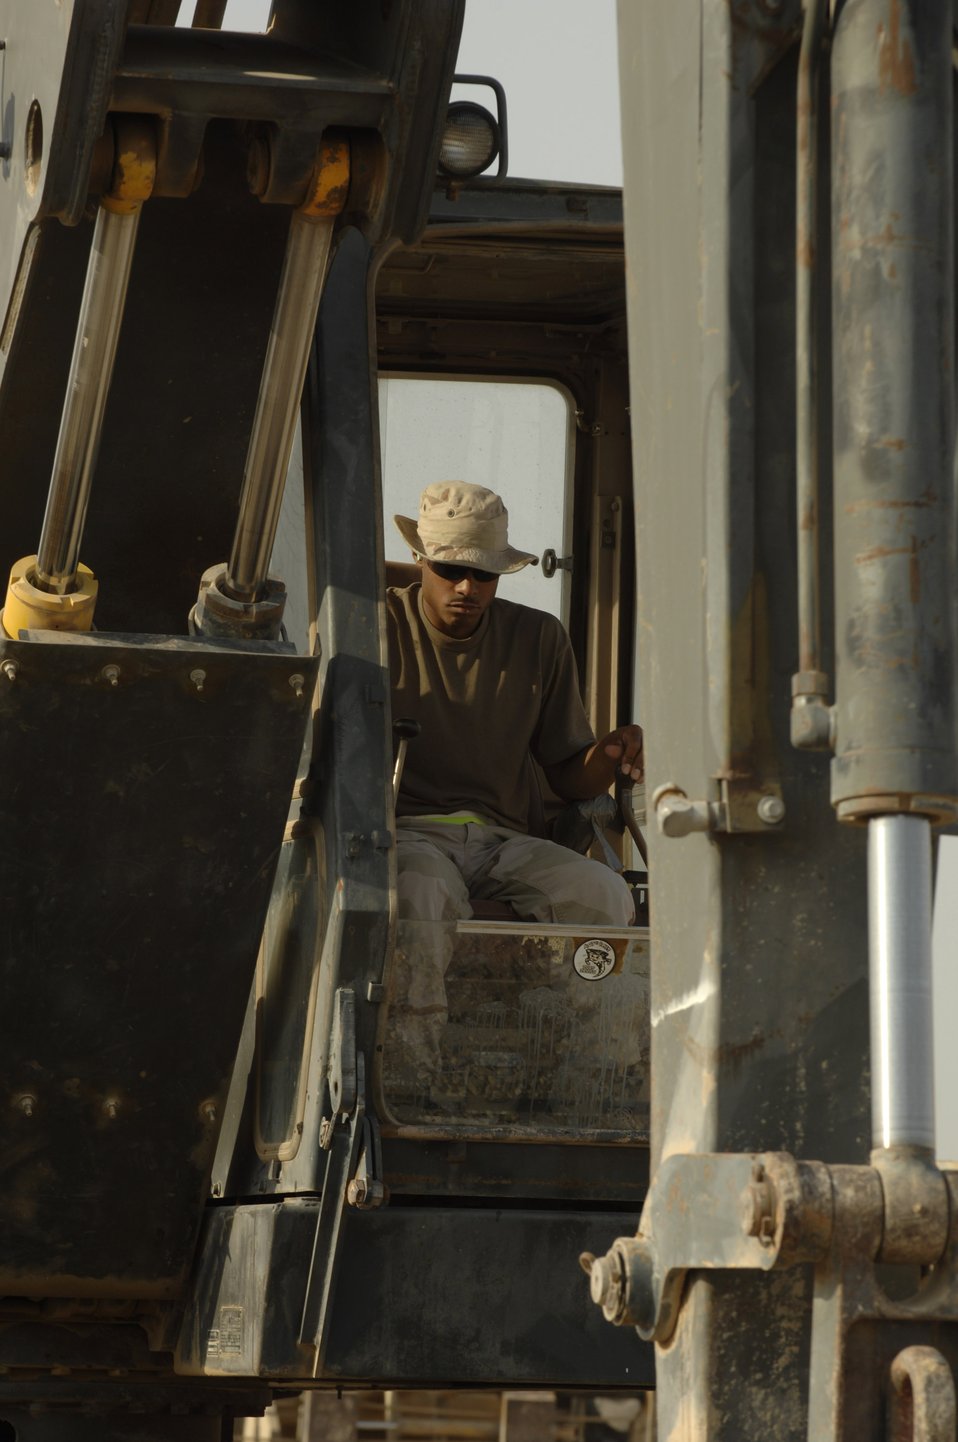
Down and Dirty

Staff Sgt. Virginio Rivera operates an excavator that is digging a trench Oct. 3 for concrete footers for sun shades being installed on the Ali Base, Iraq, flightline. Airman Davis and other Airmen in the 407th Civil Engineer Squadron are working around the clock to build the sun shades by November.